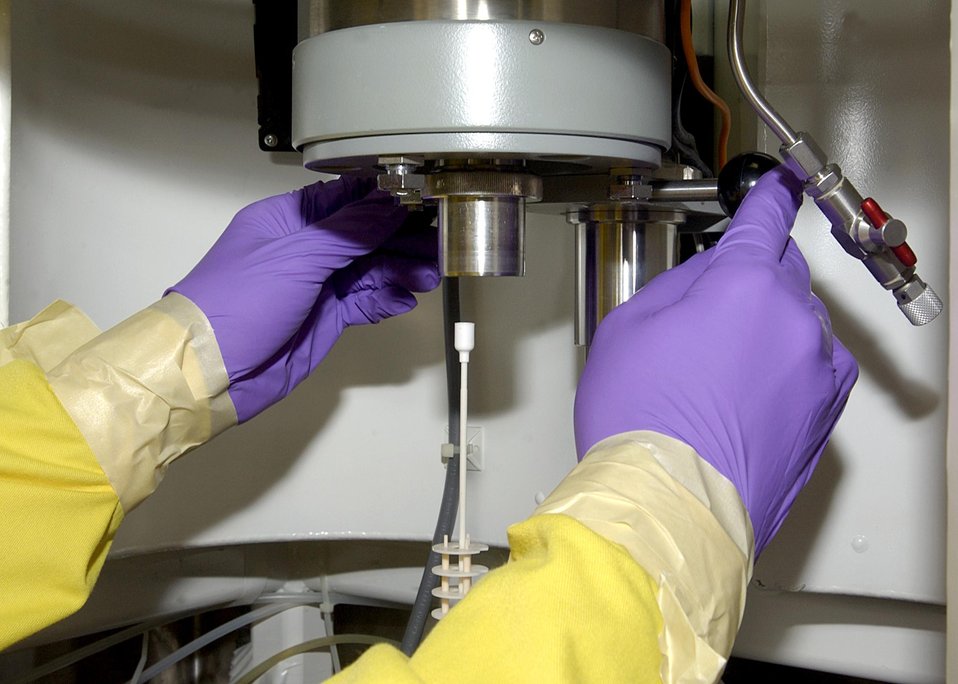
A thermogravimetric analysis provides measurements of the change in weight of exposed nuclear fuel under various temperature and atmospheric condition.
The analysis will help determine how fast corrosion would occur if a waste package in the deep geologic repository were to fail. This research is being conducted at Pacific Northwest National Laboratory.